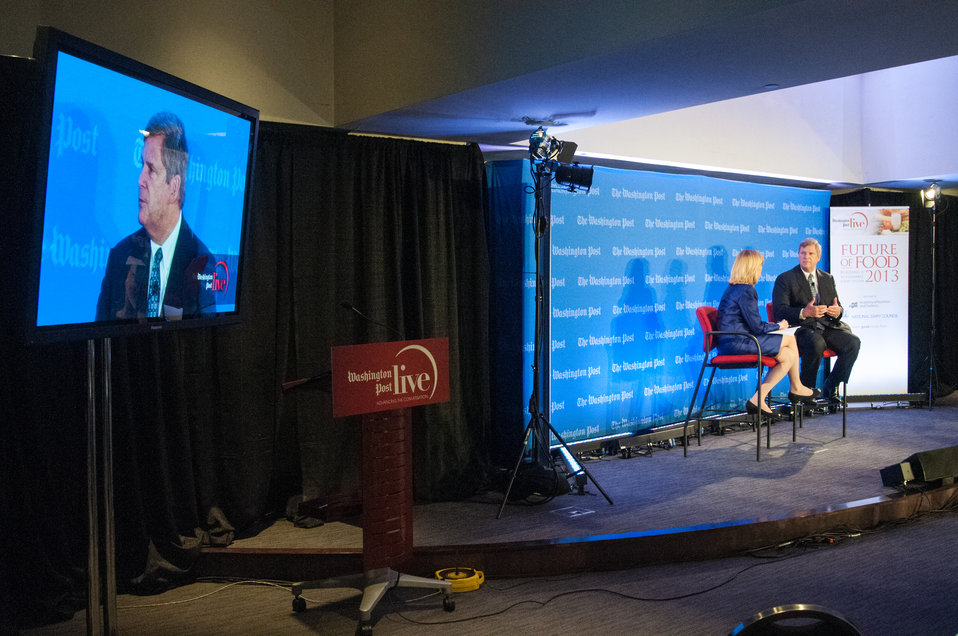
Washington Post Live Editor Mary Jordan and Agriculture Secretary Tom Vilsack respond to a question posed during the annual live forum, “Future of Food: Building a Sustainable Food System 2013,” sponsored by the Washington Post in Washington, D.C. on Wednesday, May 22, 2013. Secretary Vilsack along with leading agricultural, government and nutrition experts discussed expanding healthy, sustainable food systems, public-private partnerships, the market’s role in nutrition and the future of agricultural innovation.